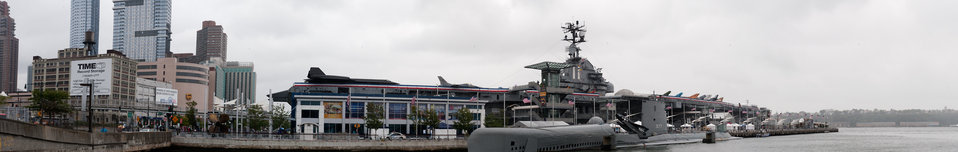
Air Force Week New York City proclamation ceremony was held at the Intrepid Sea, Air & Space Museum, aboard the USS Intrepid on Aug. 24, 2010. The event was highlighted by a six-ship flyover by the USAF Thunderbirds. The Honorable Michael Donley, Secretary of the Air Force attended, along with General Raymond Johns, Commander of Air Mobility Command. The Police Commissioner of the City of New York, the Honorable Raymond Kelly, represented NYC. Mr. Greg Kelly of